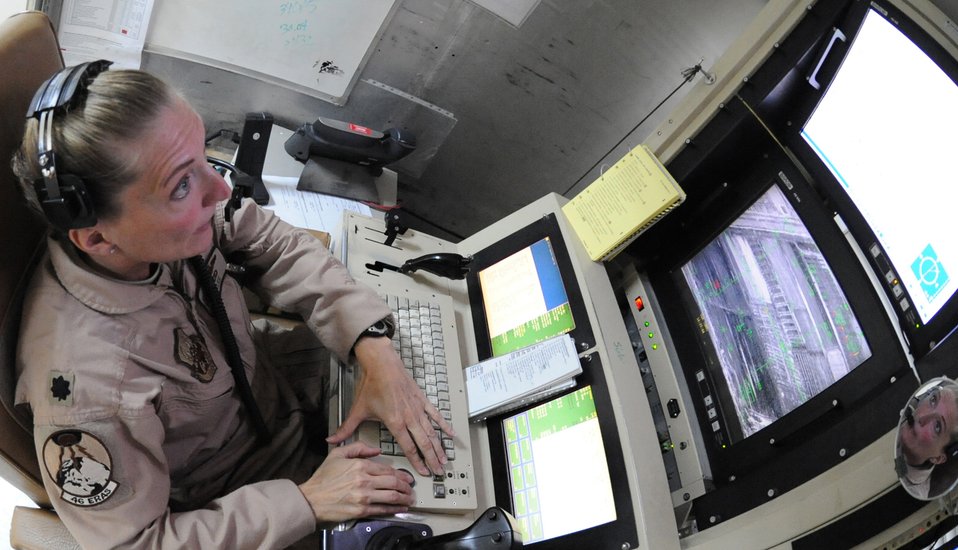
Preditor takes to the sky

Lt. Col Debra Lee, the 46th Expeditionary Reconnaissance and Attack Squadron commander at Joint Base Balad, Iraq, flies an unmanned MQ-1 Predator Feb. 13. The Predator system is made up of the ground-control system, a satellite link, personnel and the aircraft. Colonel Lee is deployed from Creech Air Force Base, Nev.